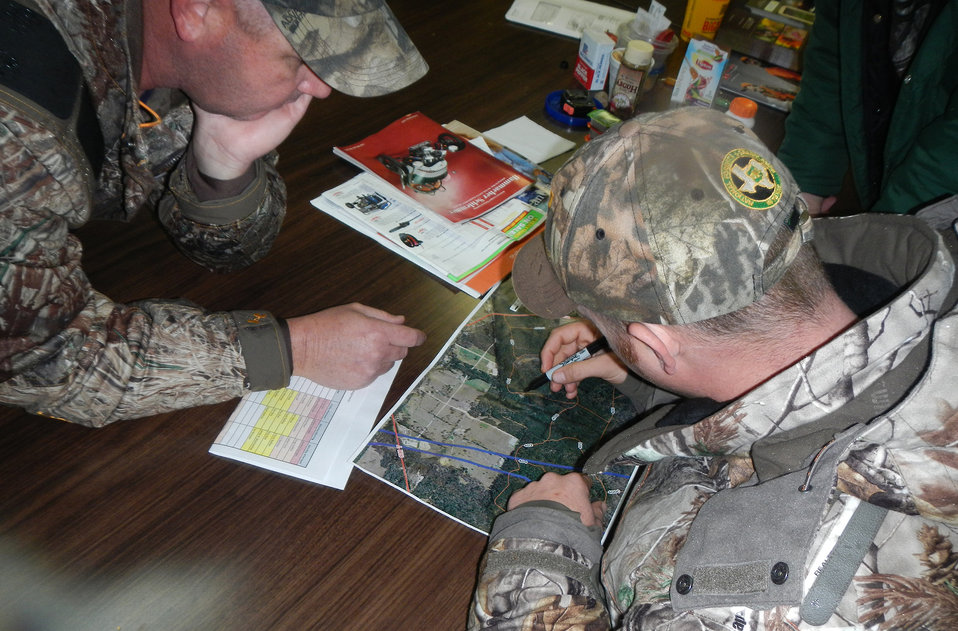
Wheelin hunter blinds

U.S. Forest Service employees Michael Sowell (right) and Lanton Chumley plan where to locate hunter blinds. The goal is to ensure sites are accessible to accommodate hunters with varying disabilities.